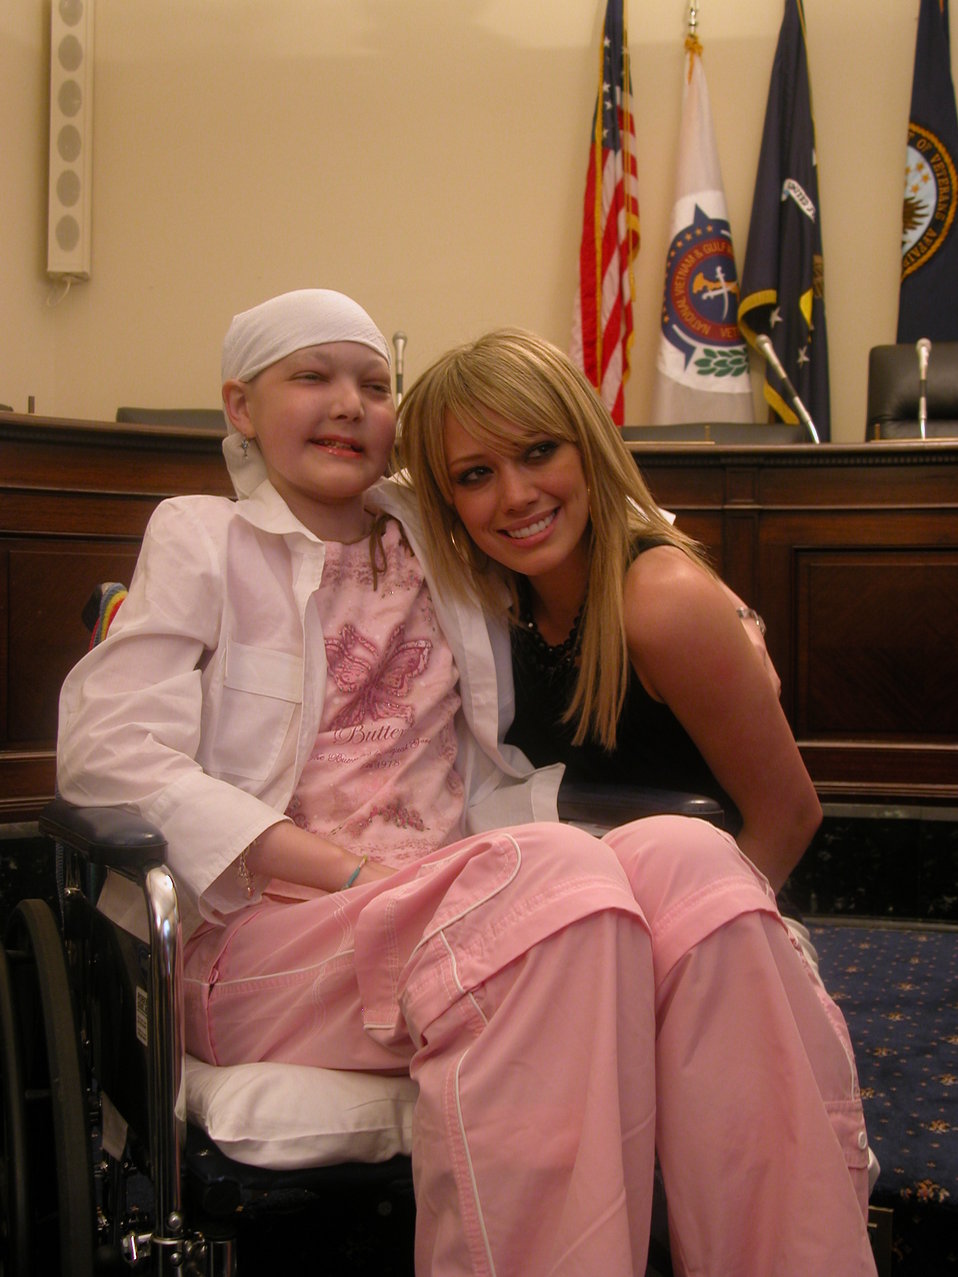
Teen queen makes 'dream come true'

WASHINGTON -- Actress and singer Hilary Duff meets with 12-year-old Alyssa Weishoff during a visit here. Alyssa is diagnosed with a rare childhood cancer called rhabdomyosarcoma. Ms. Duff came to Washington on behalf of the Armed Forces Foundation, a nonprofit organization started four years ago to support military families in need. While here, she read a story to military children, signed autographs and took photos with them and their parents as part of the foundation's kickoff of its National Military Families Week which began June 12.